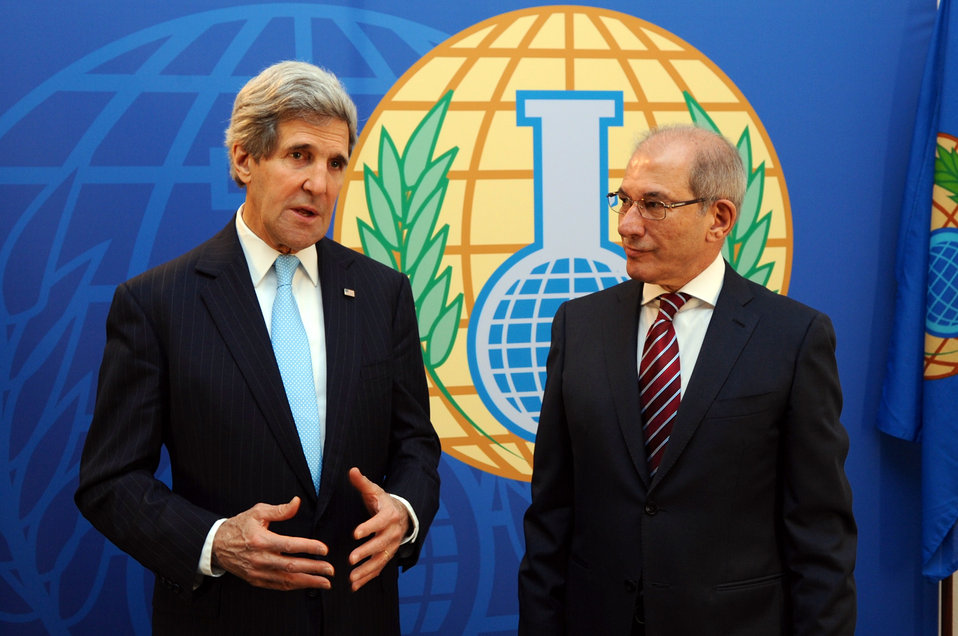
Secretary Kerry Speaks With Reporters Beside OPCW Director-General Uzumcu

U.S. Secretary of State John Kerry, joined by Organization for the Prohibition of Chemical Weapons Director-General Ahmet Uzumcu, speaks to reporters about removal of chemical weapons in Syria before a meeting at The Hague, the Netherlands, on March 24, 2014.